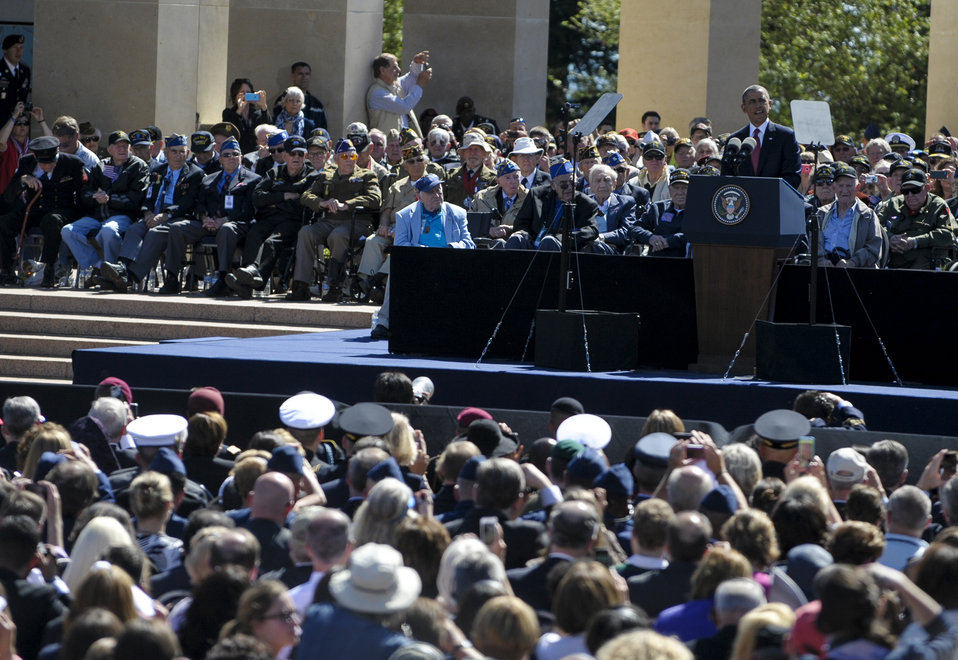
President Obama Speaks at 70th Anniversary of D-Day Ceremony

President Barack Obama honors World War II veterans at a ceremony as part of the 70th Anniversary of D-Day at the Normandy American Cemetery in Colleville-sur-Mer on June 6, 2014. The event was one of several commemorations of the 70th Anniversary of D-Day operations conducted by Allied forces during World War II June 5-6, 1944. Over 650 U.S. military personnel have joined troops from several NATO nations to participate in ceremonies to honor the events at the invitation of the French government.